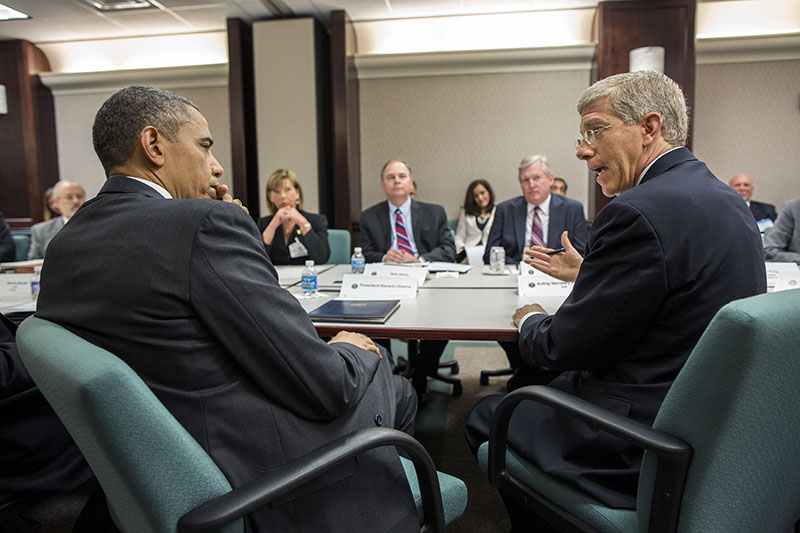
Photo of the Week: Rain or Shine, Preparing for the 2013 Hurricane Season

President Barack Obama listens to Acting Energy Secretary Daniel B. Poneman during a meeting with electric utility CEOs and trade association representatives at the Department of Energy in Washington, D.C., May 8, 2013. The group met to discuss lessons learned during the response to Hurricane Sandy, as well as the ongoing preparations for 2013 hurricane season, which begins June 1.